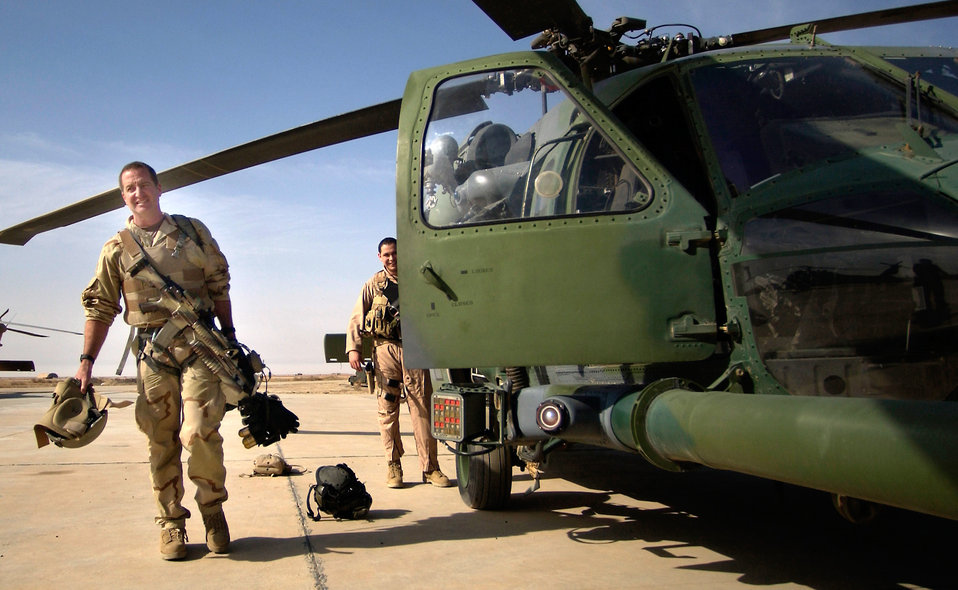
Mission complete

OPERATION IRAQI FREEDOM -- A Pararescueman from the 301st Rescue Squadron gets out of his HH-60G Pave Hawk after completing a mission April 3, 2003, at a forward deployed location in southern Iraq during Operation Iraqi Freedom.